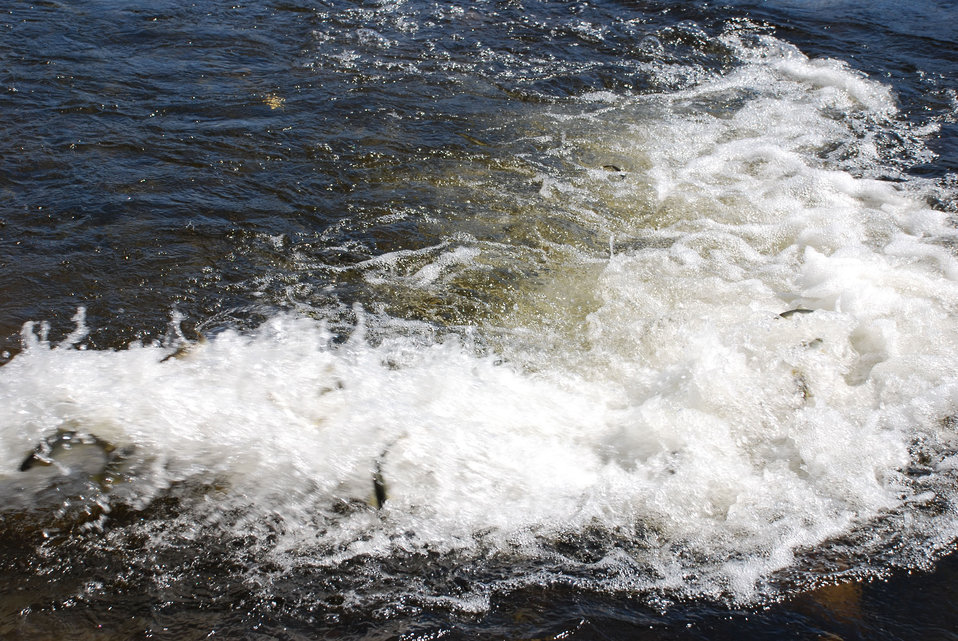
Release Plume

The Atlantic salmon smolts enter the river in a plume of white water. Within seconds the fish must adjust to their new surroundings.